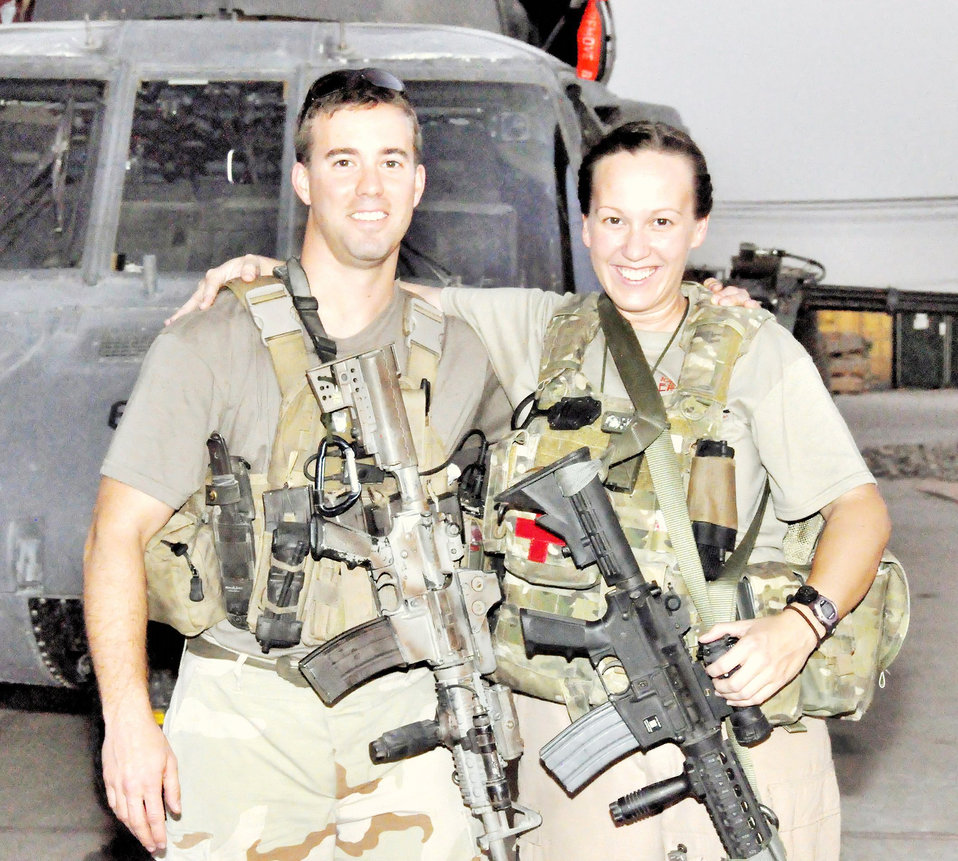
Airman helps rescue 3 injured warriors during battle in Afghanistan

Capt. Mary Jennings stands with Tech. Sgt. Aaron Butler, a pararescueman from the 23rd Wing, Moody Air Force Base, Ga. Sergeant Butler treated Captain Jennings for shrapnel wounds in Afghanistan during a July 29, 2009 rescue mission. Captain Jennings is a co-pilot with the 129th Rescue Wing at Moffett Federal Airfield, Calif.